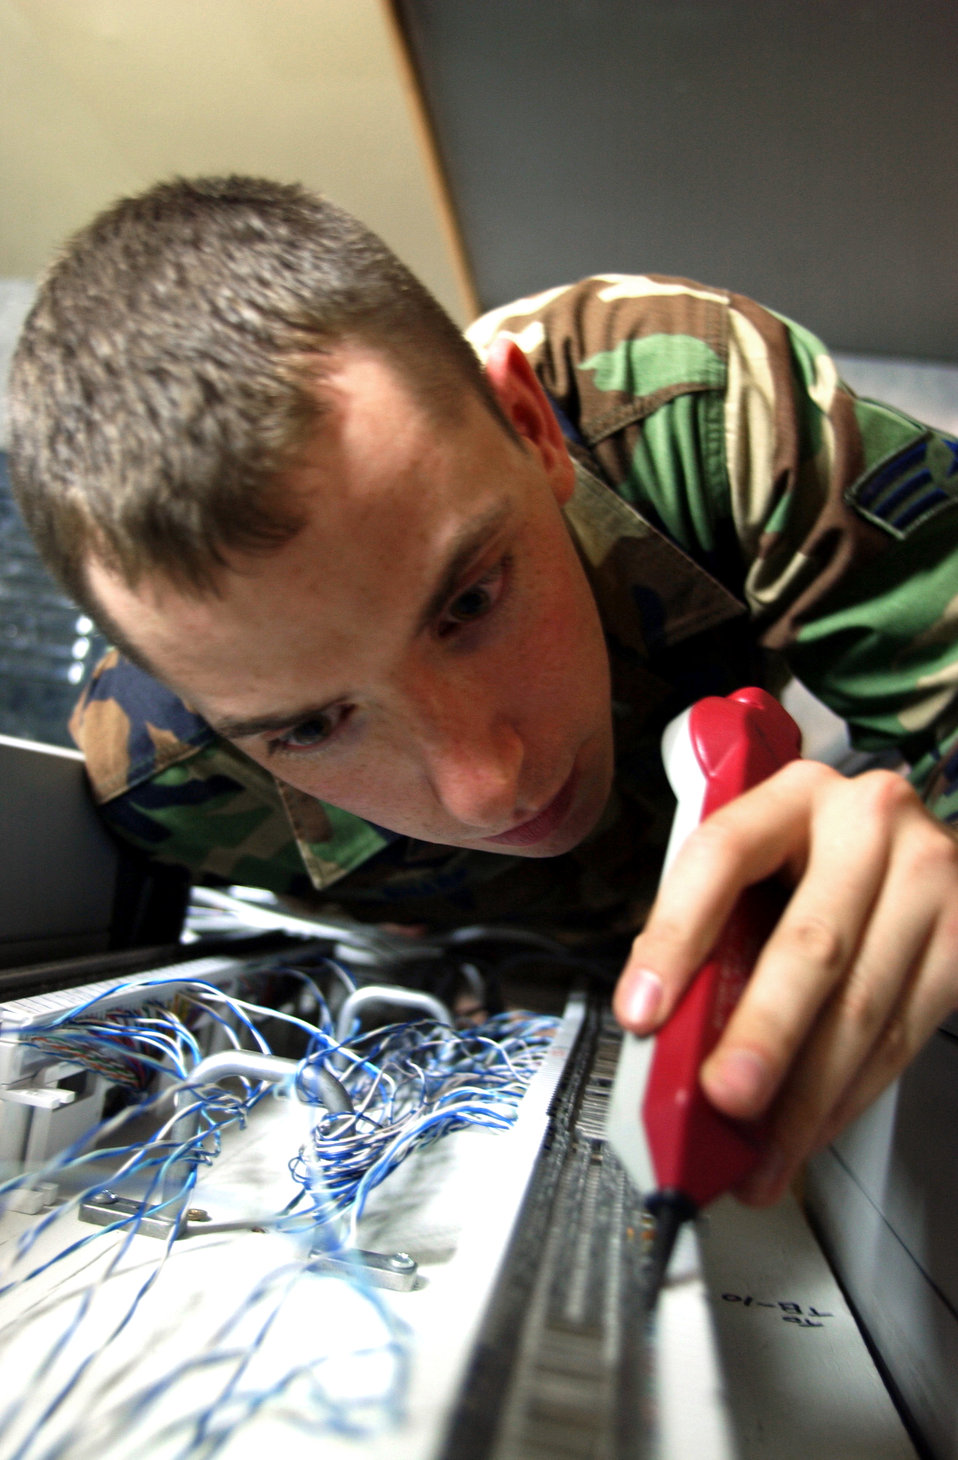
Keep 'em connected

INCIRLIK AIR BASE, Turkey -- Senior Airman Jason Sharp checks radio equipment used on outbound aircraft here June 6. He is a ground radio maintenance journeyman with the 39th Communications Squadron.